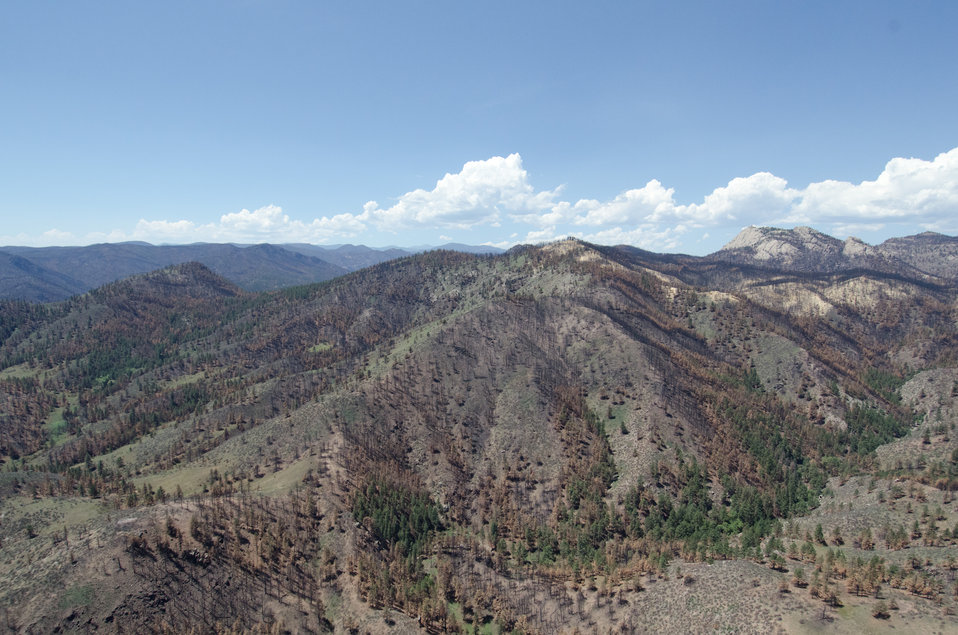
The aerial application of yellow straw continues to mitigate soil and ash runoff from the mountainous terrain leading to Seaman Reservoir, drinking water resource for the City of Greeley, on Friday, July 20, 2012, near Fort Collins, Colo. Red areas are burnt trees with pine needles that will fall to the ground and form mulch. Green areas are the remaining healthy trees that provide shade and protection to ground cover plants and shrub growth. Because of steep terrain, helicopters must be used to quickly deliver 1,800 tons of straw to Forest Service lands, while private and other lands receive a seed mix and straw to promote ground cover plant growth on ash-covered lands. In total, 1,800 tons of straw will be applied during the 14-day operation. One quarter of the cost was paid by the City of Greeley and the U.S. Department of Agriculture funded the remainder. The Hewlett Gulch Fire was started by a camper’s alcohol stove, on May 14, at the saddle of a picturesque mountain ridge along the Hewlett Gulch Trail of Poudre Canyon, in the Roosevelt National Forest, 60 miles north of Denver. At it’s peak, more than 400 firefighters were battling fires being pushed by 50 mph winds that helped blacken over 12-square-miles of dry ground cover, brush and trees. Many of the trees were already dead and tinder dry from beetle-kill. The water in the reservoir remains clean and clear, while downstream water flow has gone from famous Colorado clear water to nearly black flows of water heavily laden with ash, silt, and burnt debris that recent thunderstorms have already washed down from the mountainsides.